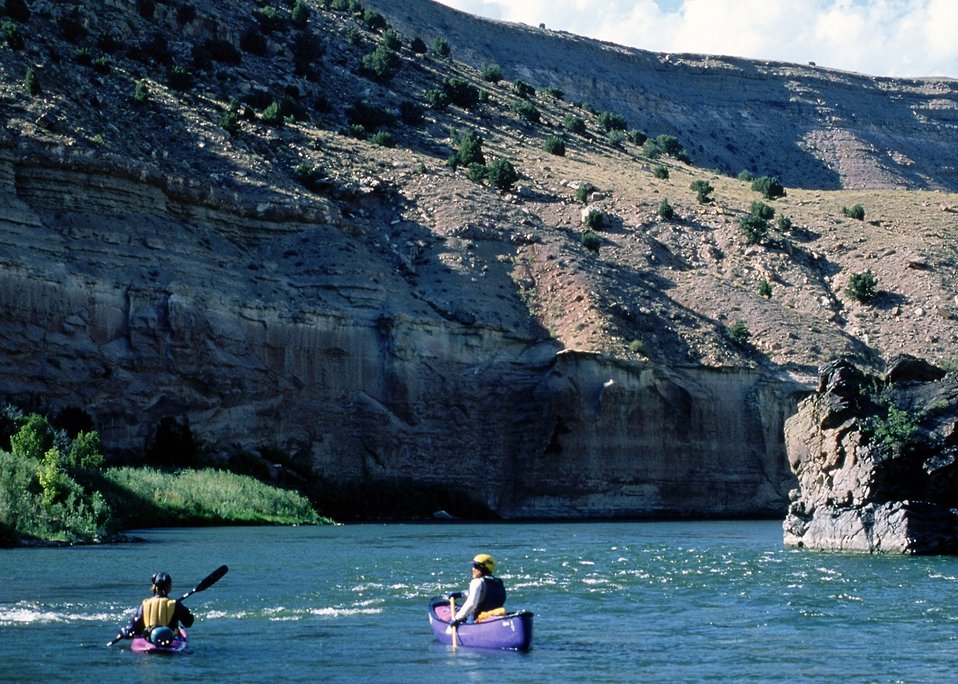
Canoe/Kayak